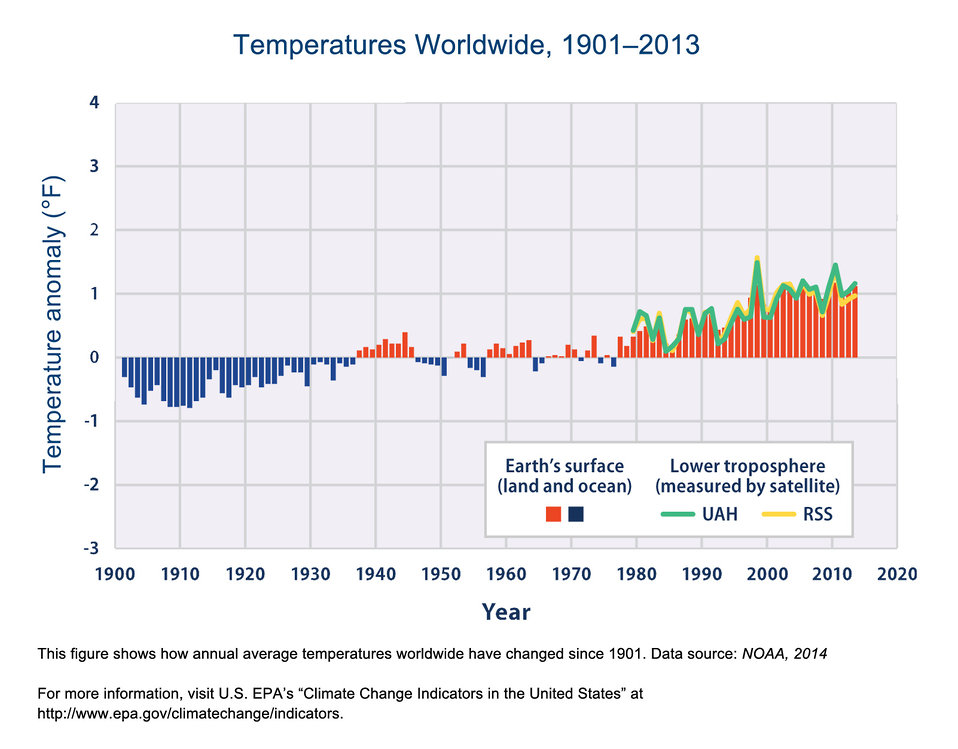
Temperatures Worldwide

Worldwide, 2001-2010 was the warmest decade on record since thermometer-based observations began in 1901. Our 2013 Climate Change Indicators Report includes 30 indicators tracking the signs of #ClimateChange in the U.S.: www.epa.gov/climatechange/indicators/